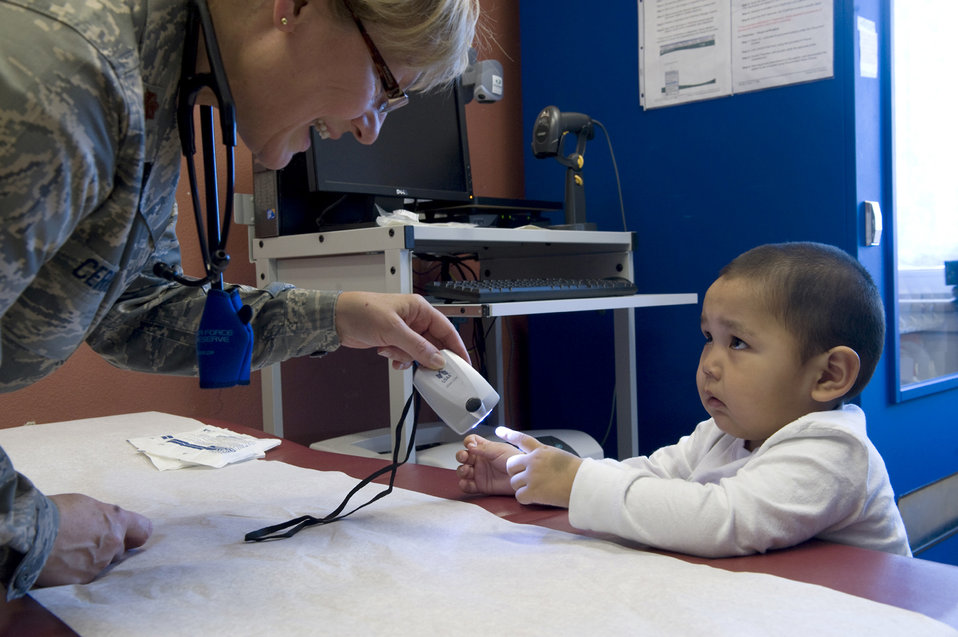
Operation Arctic Care

Maj. Emily Cerreta uses a blinking light to gain acceptance from 23-month-old Hikerr Snyder prior to his well-baby checkup April 14, 2010, in Noorvik, Alaska. Major Cerreta is a family nurse practitioner from the 433rd Airlift Wing at Lackland Air Force Base, Texas, and is in Alaska for Operation Arctic Care, a joint medical training exercise.